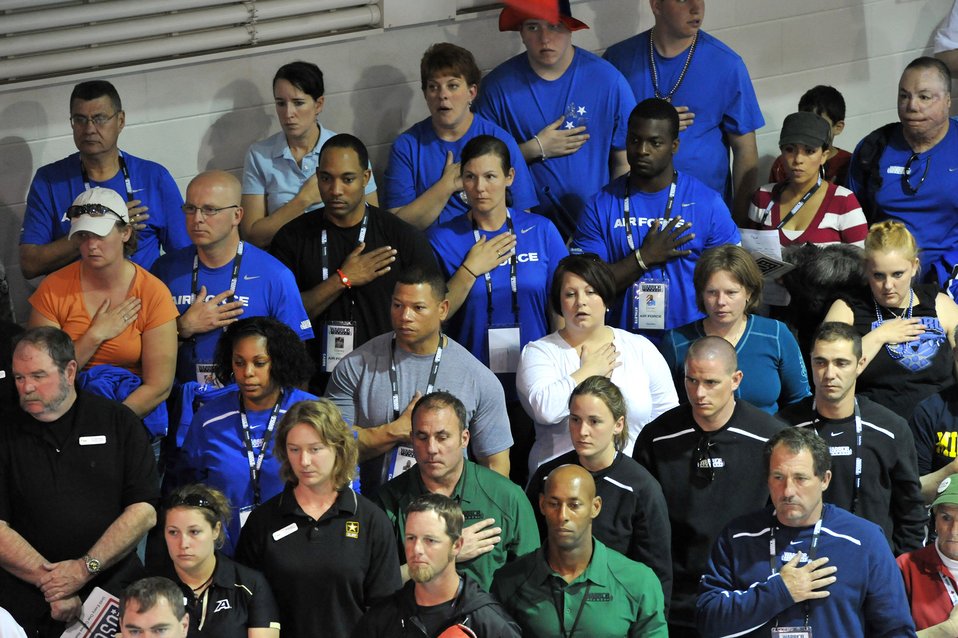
Swimming Prelims

Team Air Force stands during the National Anthem before the swimming
competition of the inaugural Warrior Games at the U.S. Olympic
Training Center in Colorado Springs, Colo., May 18, 2011. Some 200
wounded warriors and disabled veterans from all the military services
are competing in paralympic-style athletic events May 16-21.